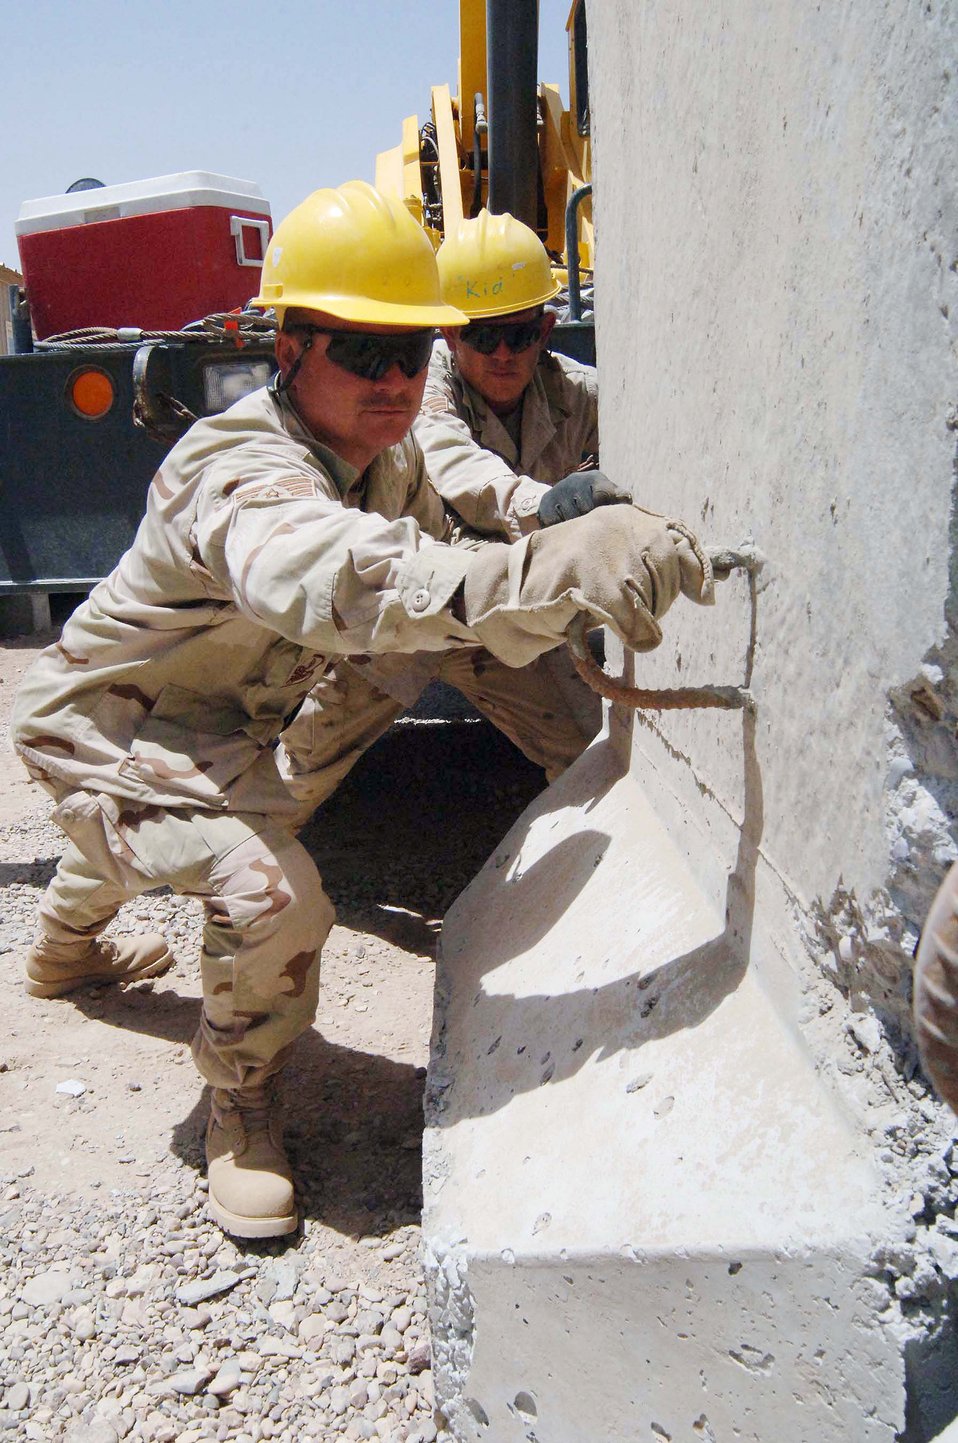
Concrete barriers save lives

Tech. Sgt. Scott Hamrick (front) and Senior Airman Aaron Jacobson guide a concrete T barrier into place June 27 at Sather Air Base, Iraq. The barrier sections, moved by large cranes, are part of a concrete wall being pieced together for protection against incoming rockets and mortars. Sergeant Hamrick and Airman Jacobson are pavement specialists with the 447th Expeditionary Civil Engineer Squadron.